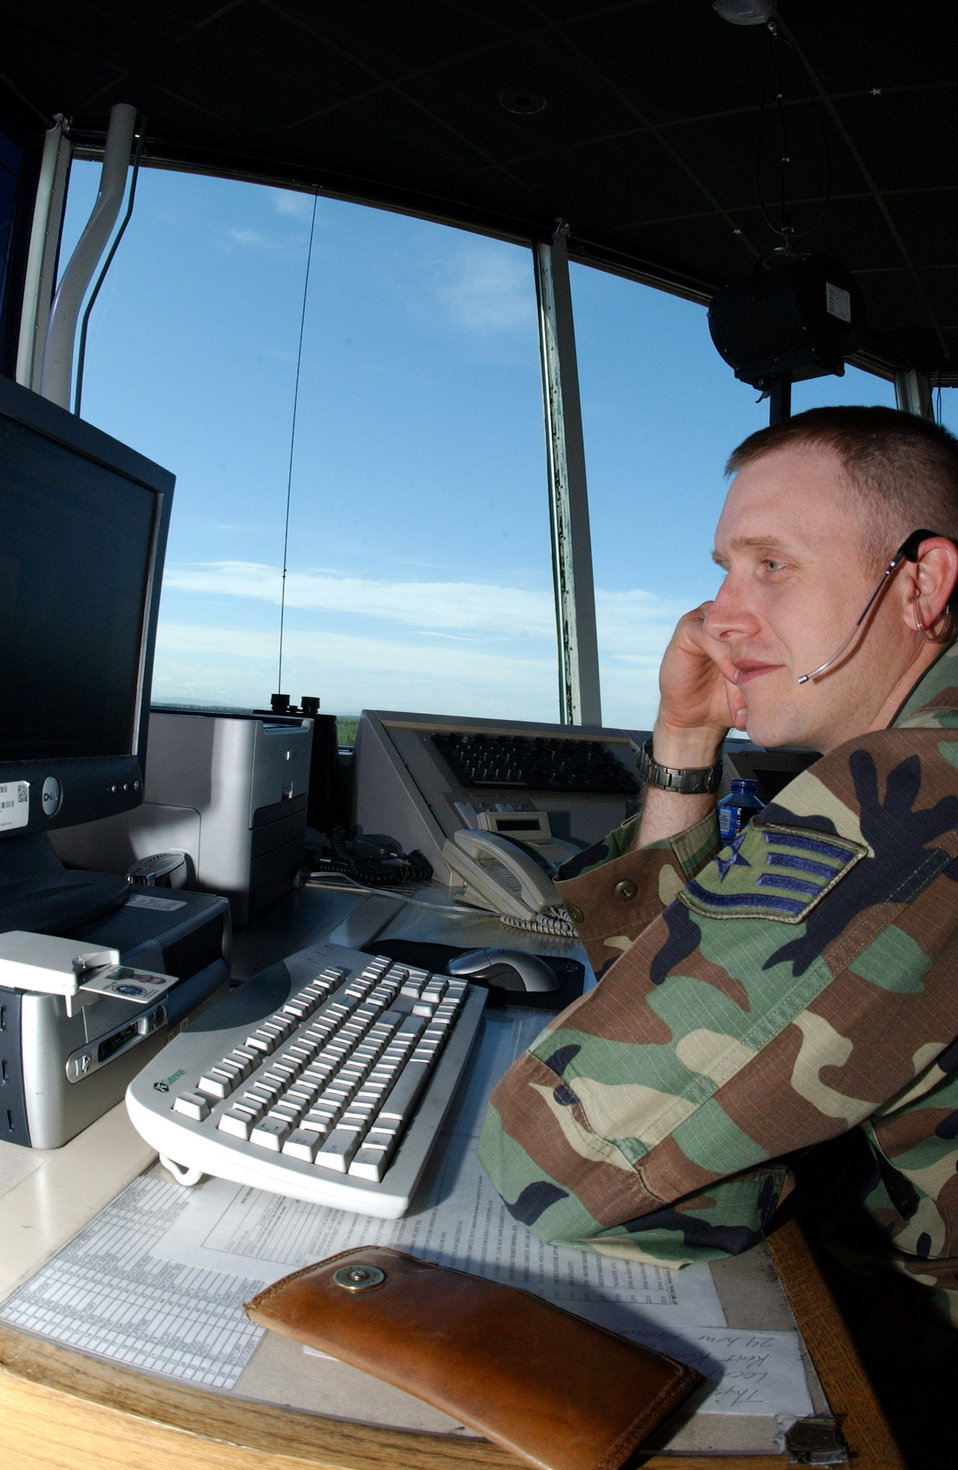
Cleared for takeoff

Staff Sgt. Jeremy Garrett checks the weather forecast May 23 in the air traffic control tower at Eielson Air Force Base, Alaska. Sergeant Garrett is an air traffic controller with the 354th Operations Support Squadron.